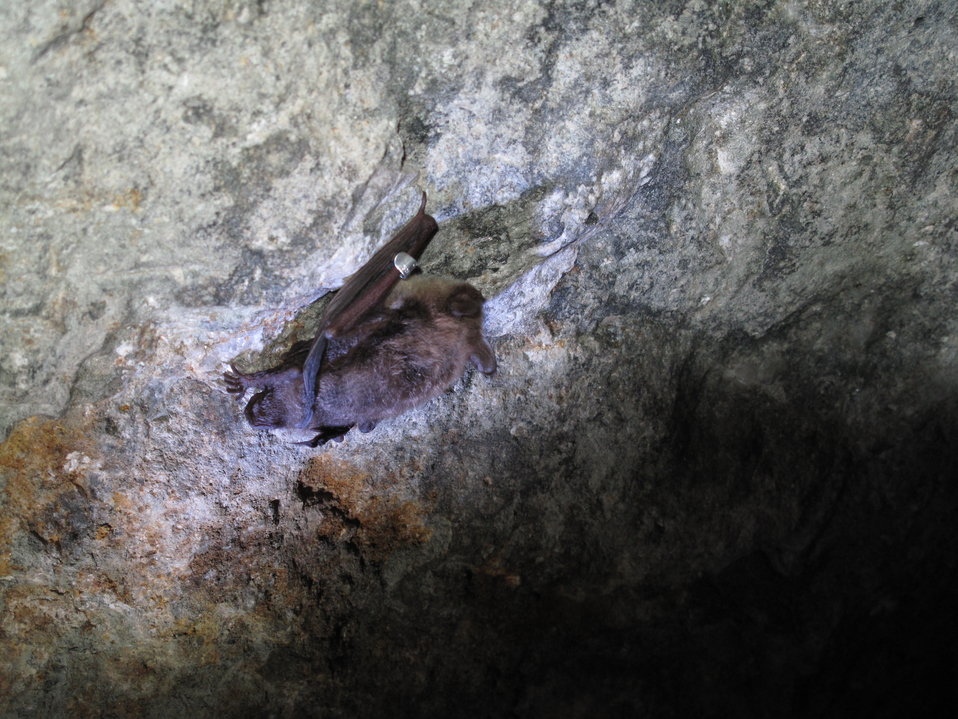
Tagged bat on mine wall